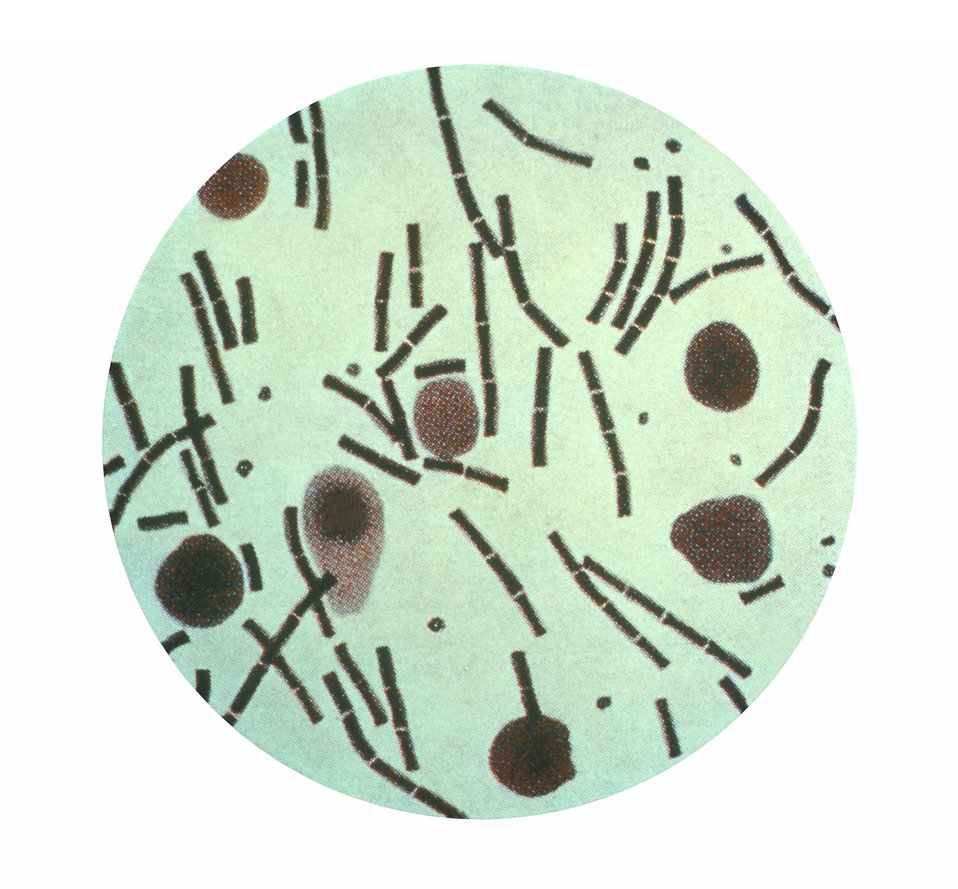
This illustration depicts Bacillus anthracis taken from the peritoneum using a Hiss capsule stain.